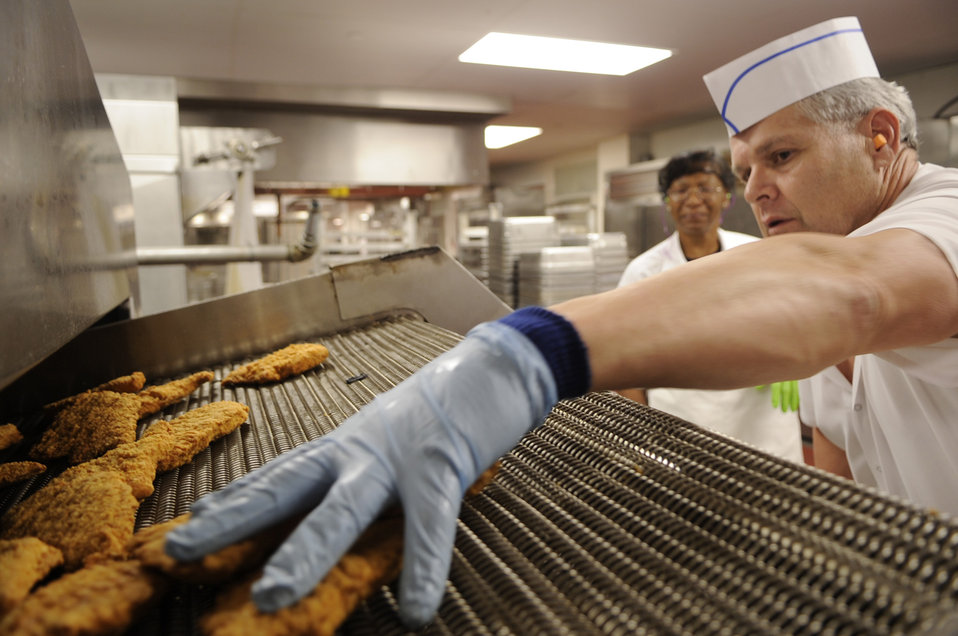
U.S.Air Force Academy Mitchell Hall Cadet Dining Facility

Patrick Burns and Betty Hayes pull chicken from the